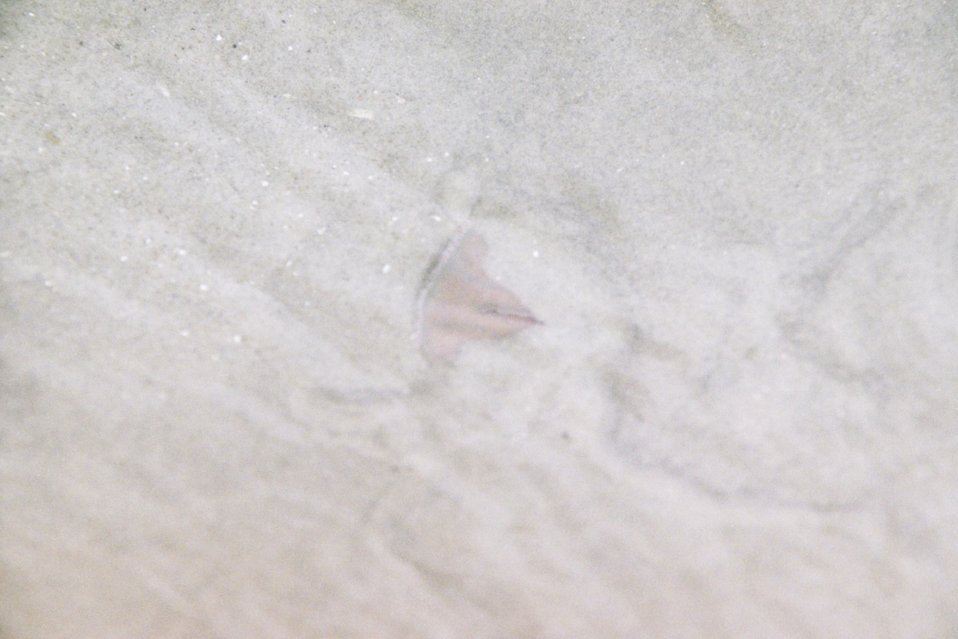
A partially buried skate in shallow waters